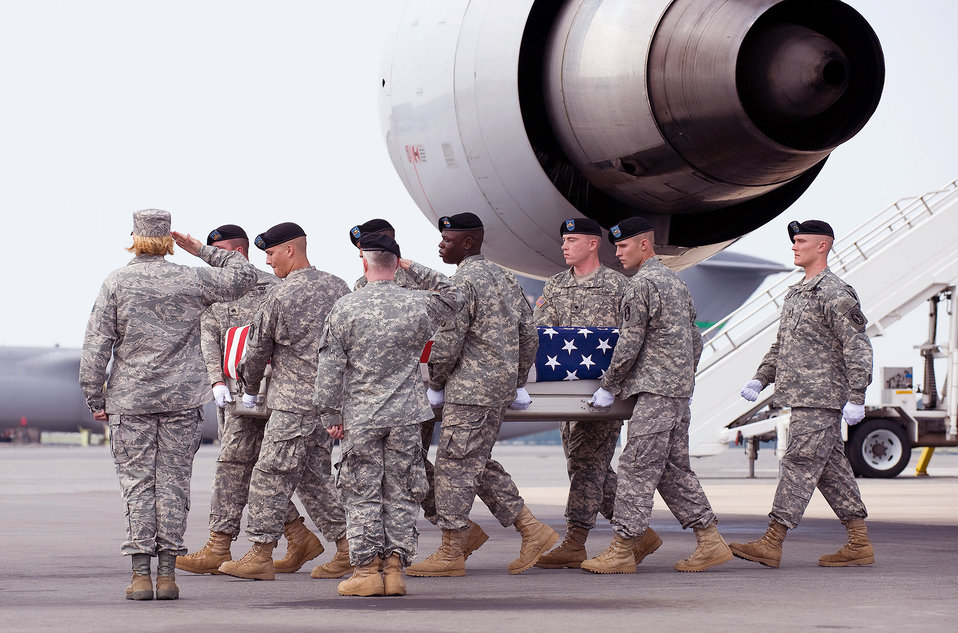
Dignified transfer mission close to home for Dover colonel

Col. Sharon Bannister and Army Maj. Gen. Merdith W. B. Temple salute as an Army carry team transfers the remains of Army Spc. Jamal M. Rhett Aug. 17, 2010, at Dover Air Force Base, Del. Colonel Bannister is one of nine colonels at Dover AFB who share the duty of calling the orders at dignified transfers honoring fallen servicemembers who return to U.S. soil.